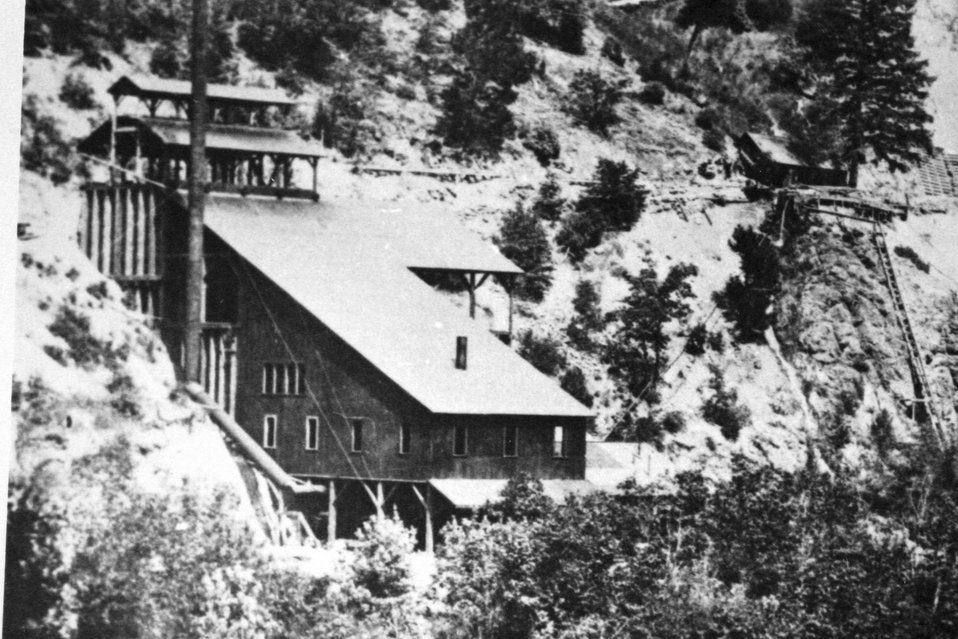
Close up copy of the Almeda mine C. 1910 - 1911